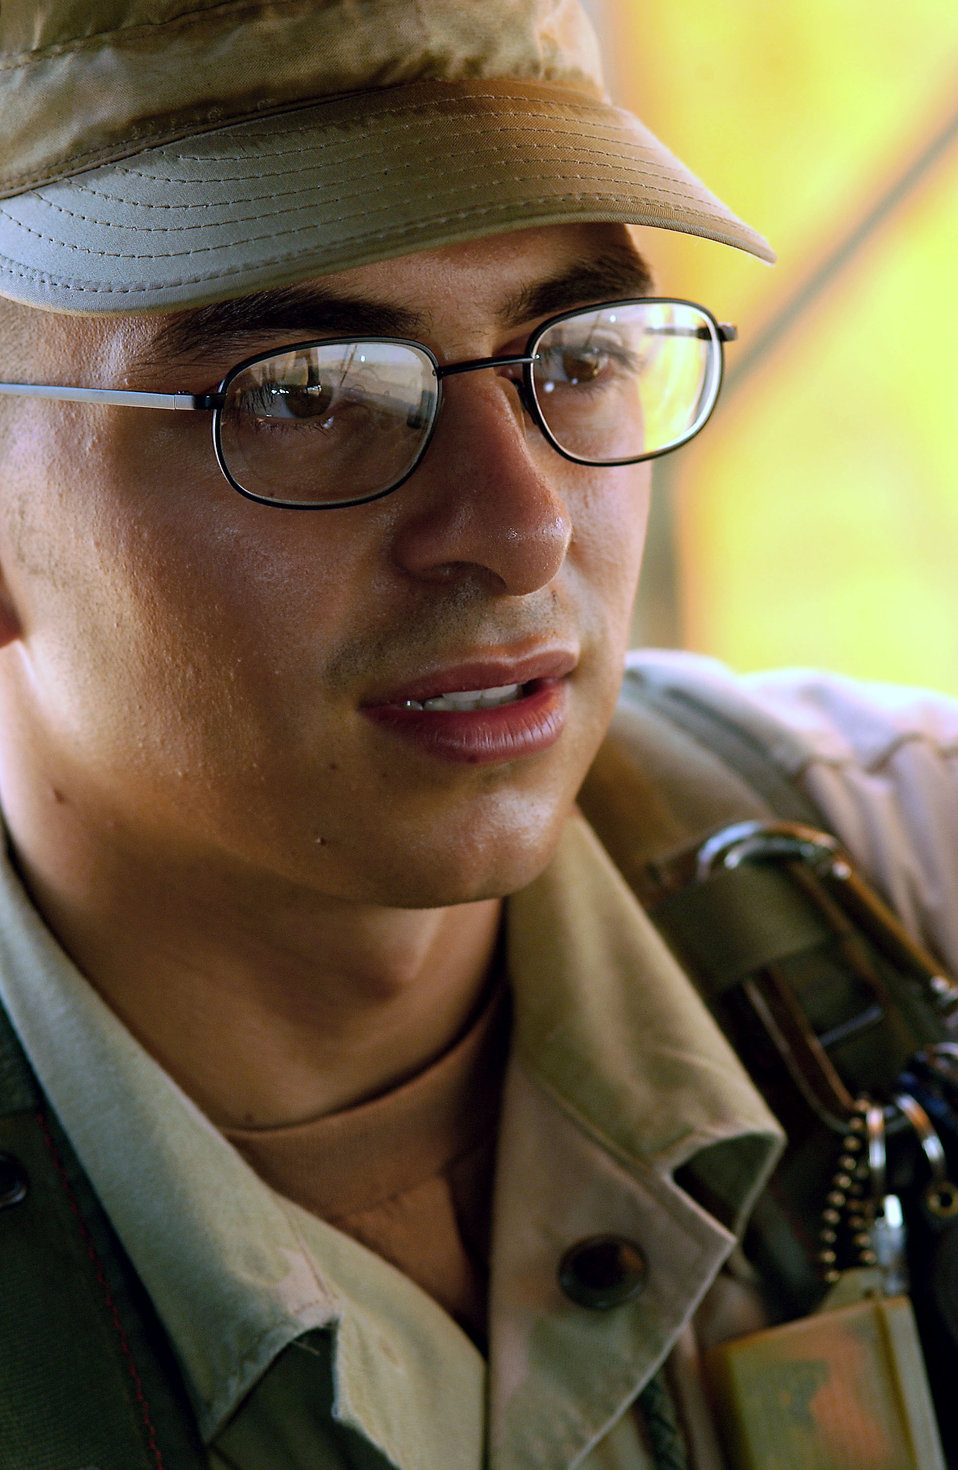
Aceves

OPERATION IRAQI FREEDOM -- Senior Airman Richard Aceves, a security forces journeyman deployed from the 163rd Air Reserve Squadron, March Air Force Base, Calif., to the 363rd Expeditionary Security Forces Squadron, scans a perimeter during a perimeter security check on April 4, 2003.